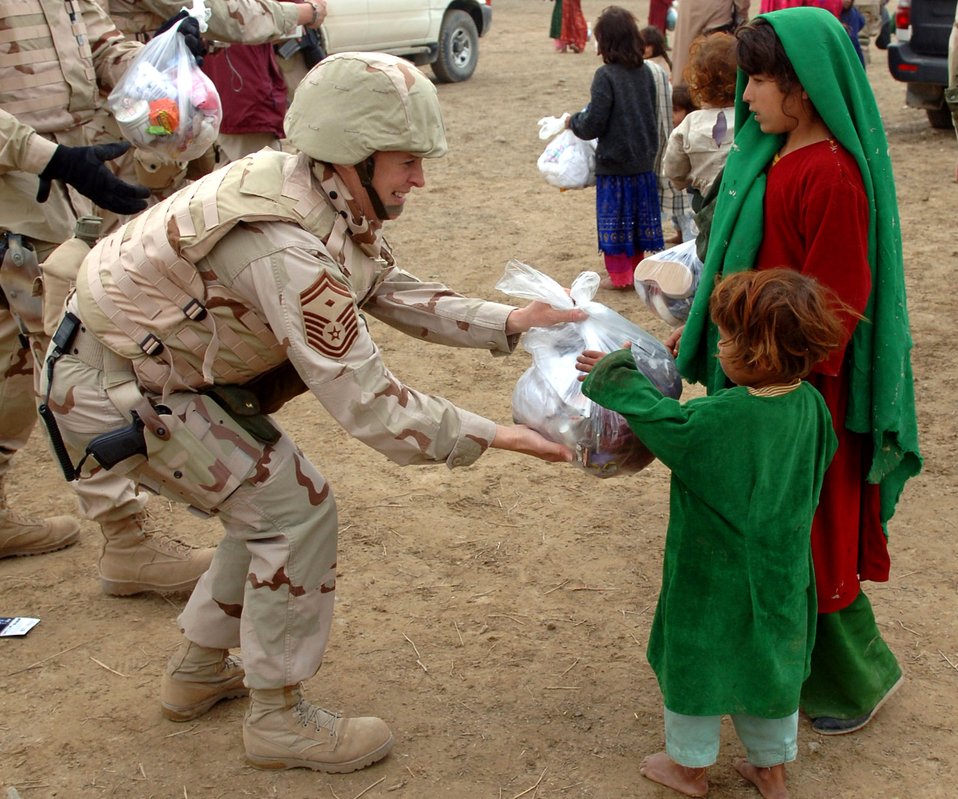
Airmen reach out

Senior Master Sgt. Diana Brown gives clothes to two Afghan girls during a recent Adopt-A-Village visit in Parwan Province, Afghanistan. More than 40 Airmen participated in giving the village of Gadia more than 400 bags of clothes, hygiene items and school supplies. Sergeant Brown is the 455th Expeditionary Aircraft Maintenance Squadron first sergeant at Bagram Air Base, Afghanistan. She is deployed from the Ohio Air National Guard's 179th Airlift Wing.